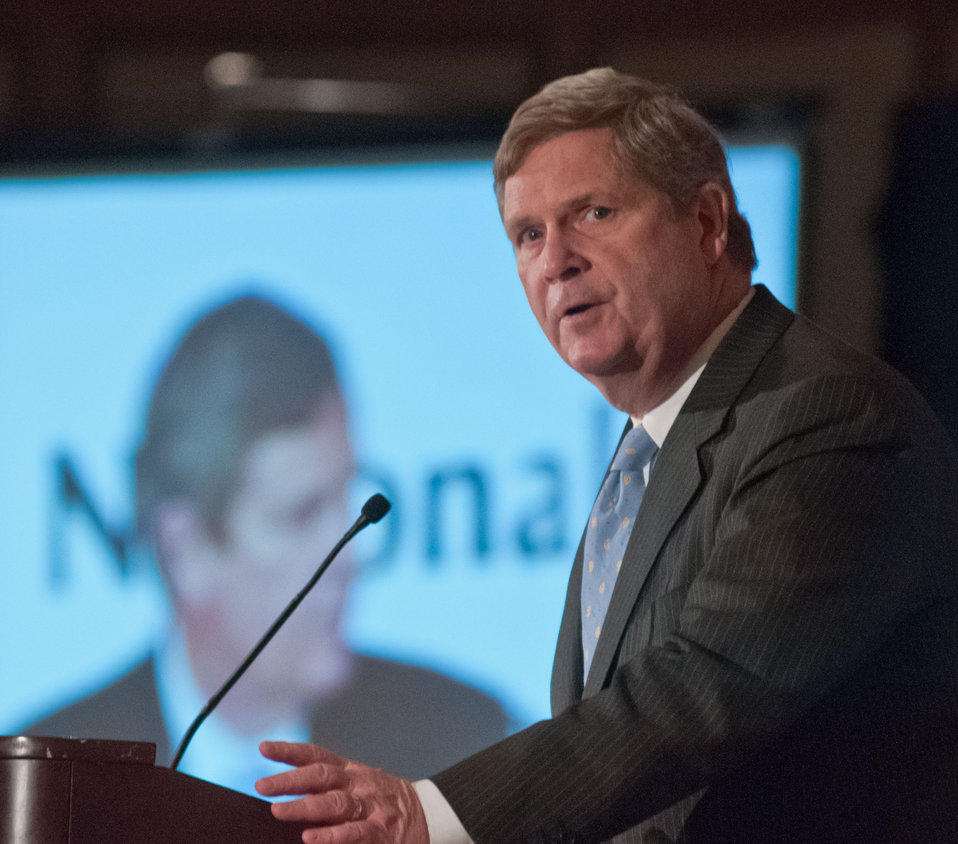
Agriculture Secretary Tom Vilsack today joined tribal leaders from across the nation at the National Congress of American Indians Tribal Nations Legislative Summit in Washington, D.C. on Wednesday March 7, 2012, where he announced investments of $900,000 for positive nutrition education and physical activity habits that can lead to healthier lifestyles. The grants are funded through U.S. Department of Agriculture’s (USDA) Food Distribution Program on Indian Reservations (FDPIR) and will provide nutrition education materials and resources for children and parents in tribal communities in 9 states. USDA chose 17 applicants, located in California, Minnesota, Montana, Oklahoma, South Dakota, Washington, Wisconsin, New Mexico and Alaska to receive FY 2012 funding to develop nutrition education projects that incorporate Dietary Guidelines recommendations within the Native American culture. Secretary Vilsack reiterated USDA’s support to native communities with financial support for electric, broadband and wastewater infrastructure, and provide native families and businesses with home loans and business grants. Secretary Vilsack emphasized USDA’s participation in the First Lady’s Lets Move in Indian Country initiative to combat childhood obesity in tribal communities.